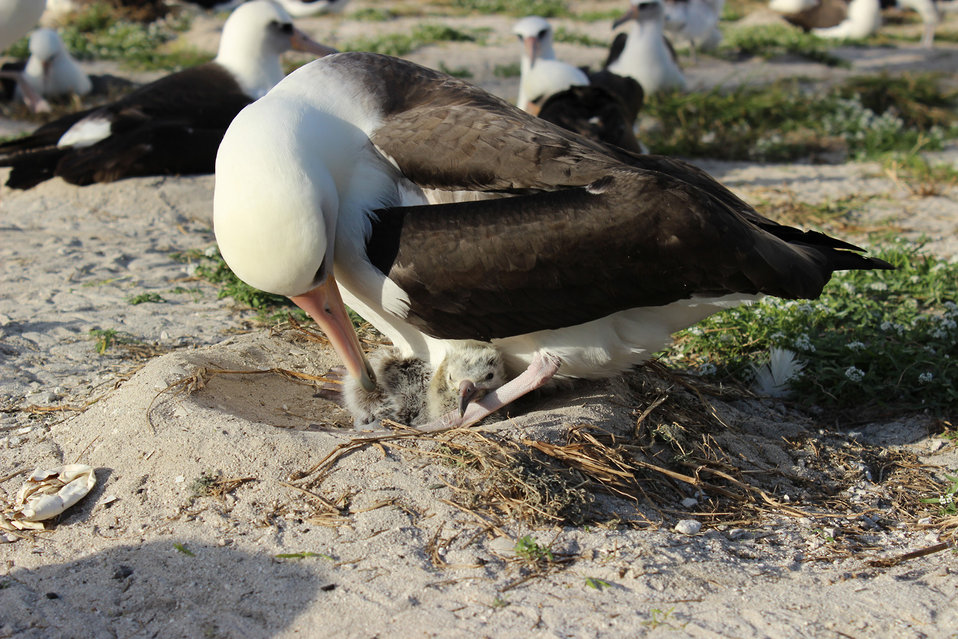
Newly hatched Laysan albatross chick on Midway Atoll NWR.02.02.2014